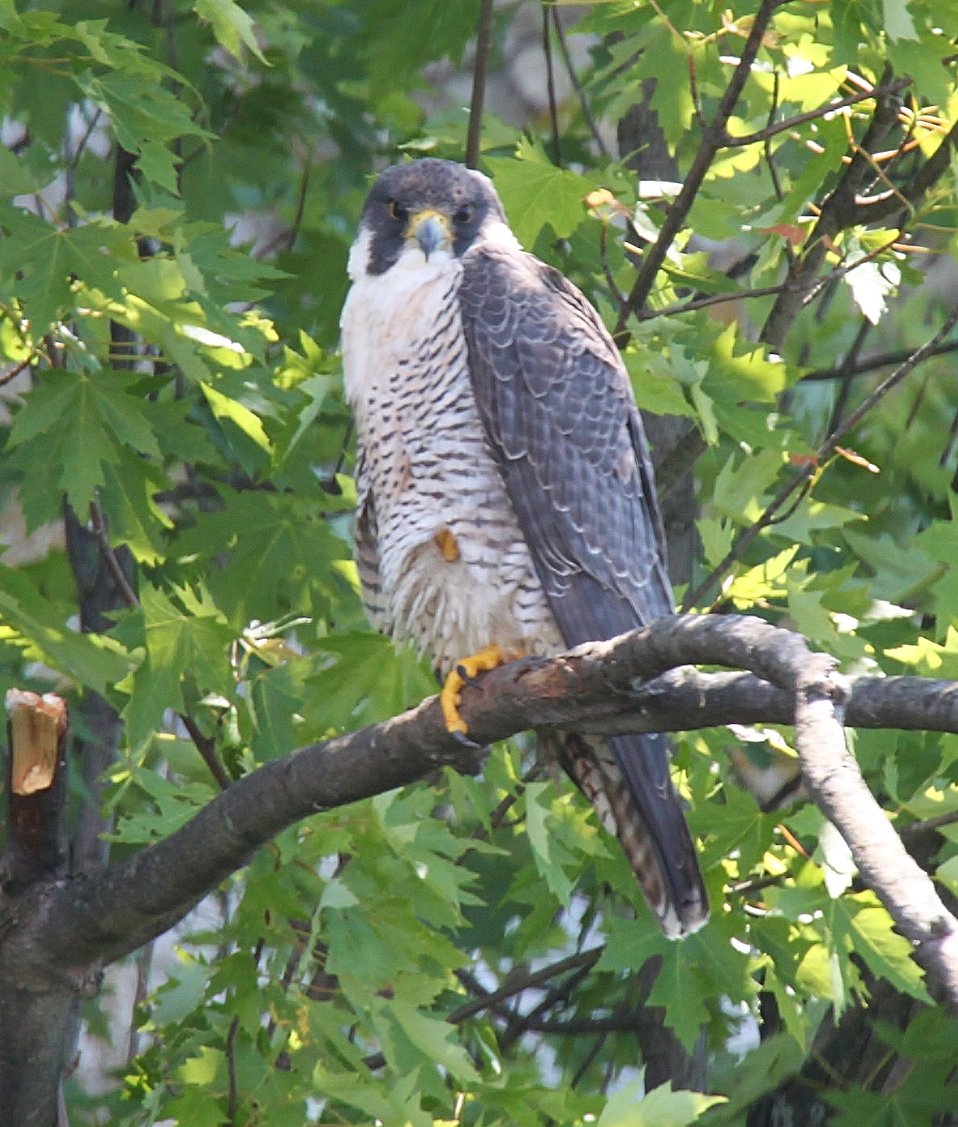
Female Peregrine Falcon photographed at Missisquoi National Wildlife Refuge.